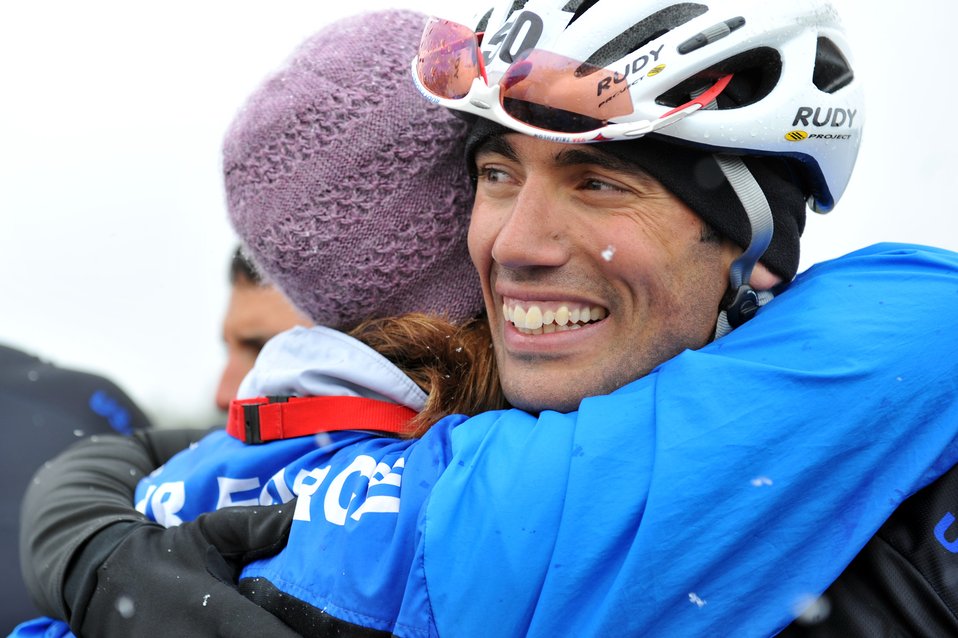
Warrior Games AF Cycling

Adam Tanverdi receives a hug from Air Force head coach Cami Stock after finishing up in fourth place in the 20-kilometer upright bike race for the inaugural Warrior Games May 13, 2010, at the U.S. Air Force Academy in Colorado Springs, Colo. Tanverdi is one of some 200 disabled veterans participating in the Paralympic-style competition May 10 through 14.